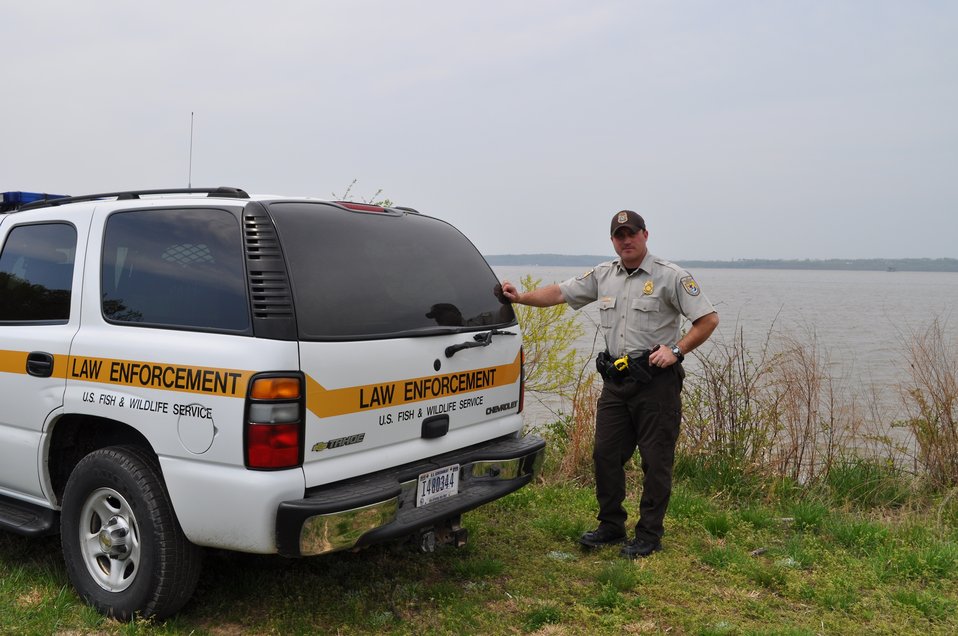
Officer Gareth Williams

National Wildlife Refuge System Law Enforcement Officer Gareth Williams saved a life by investigating a matter in northern Virginia. Williams, based at the Potomac River National Wildlife Refuge Complex, was named 2011 Officer of the Year for the U.S. Fish and Wildlife Service’s Northeast Region. (USFWS)